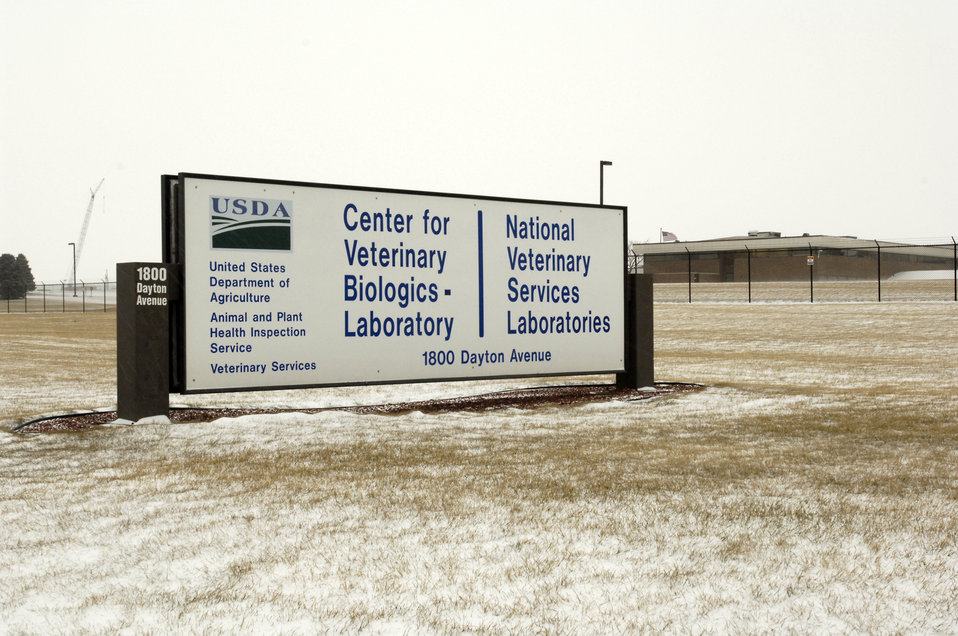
U.S. Department of Agriculture (USDA) Animal and Plant Health Inspection Service (APHIS) APHIS’s National Veterinary Services Laboratory in Ames, Iowa is a World Organization for Animal Health (OIE) reference laboratory for numerous diseases, including avian influenza.